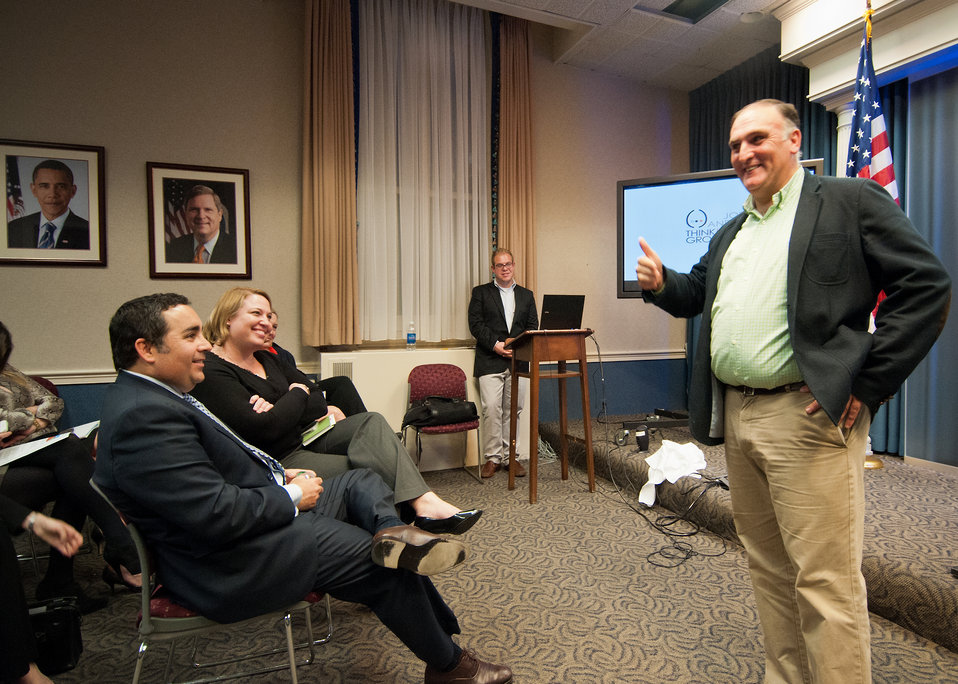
Max Holtzman, Senior Policy Advisor and Sally Cluthe, Director of Scheduling and Advance listen to Chef Jose Andres, Chef/Owner, Think Food Group the guest speaker at the kick-off meeting of the United States Department of Agriculture White House Liaison Weekly Political Appointee Meeting for the New Year in Washington, DC, Thursday, January 20, 2012. Chef Andres discussed creativity and how it can contribute to food policy.